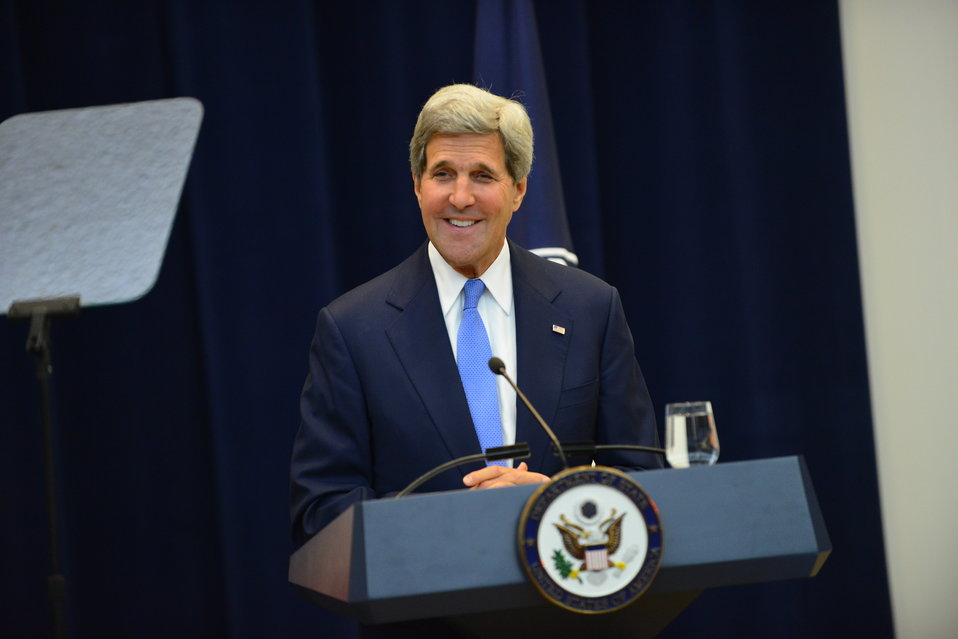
Secretary Kerry delivers remarks at the World Food Prize Ceremony, at the U.S. Department of State in Washington, D.C. on June 18, 2014.